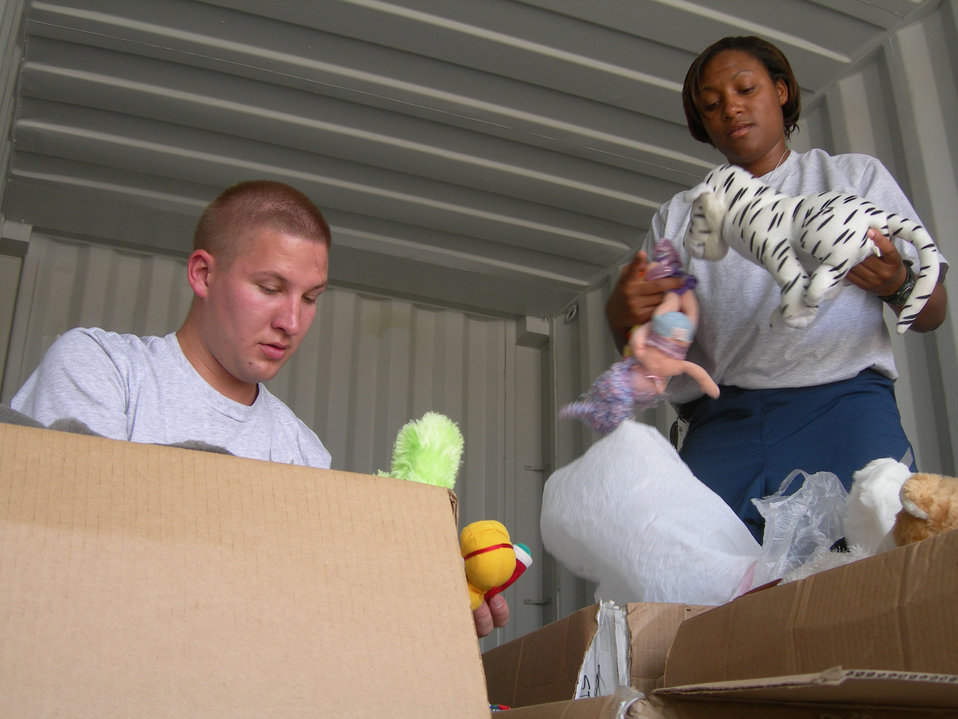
Sergeants toy with donations

Staff Sgts. Scott Klobucher and Samantha Ross sort through boxes of donated toys at Balad Air Base, Iraq.